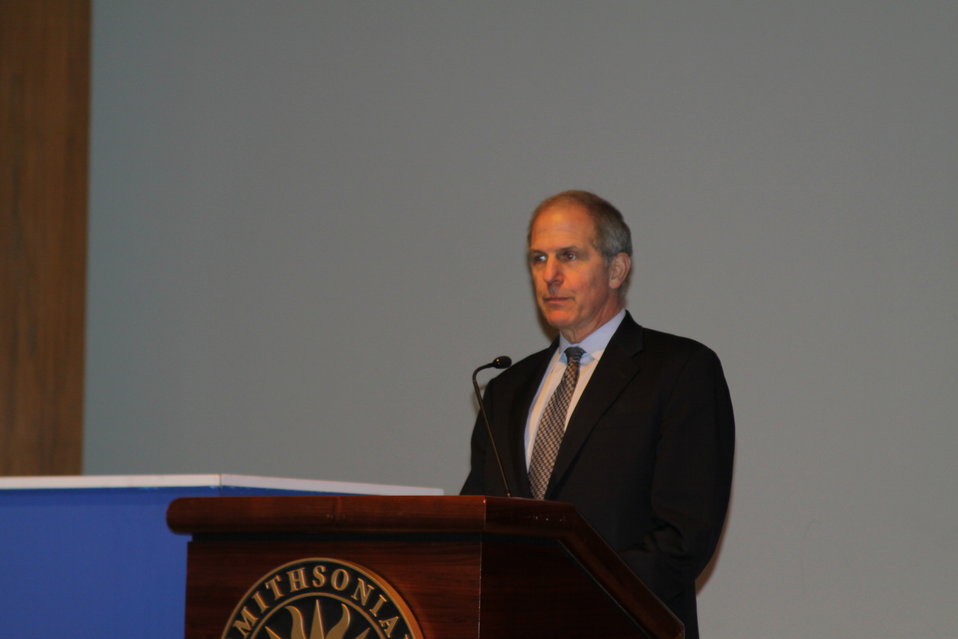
March 12, 2010- Smithsonian Broadband with Elmo